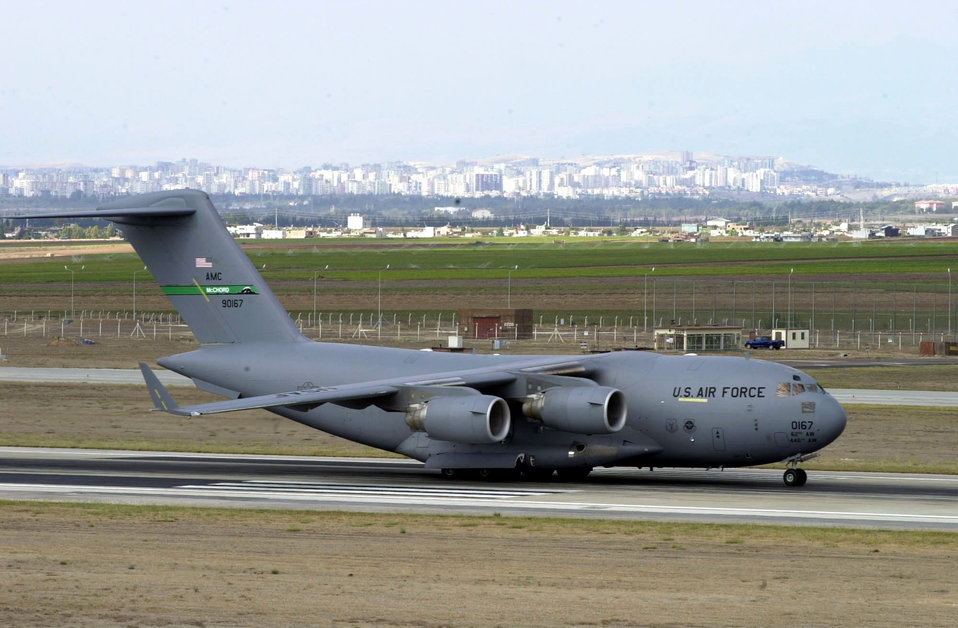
Turkey taxi

INCIRLIK AIR BASE, Turkey -- A C-17 Globemaster III taxis down the runway after landing at Incirlik. The aircraft was flying a support mission in support of Operation Enduring Freedom.